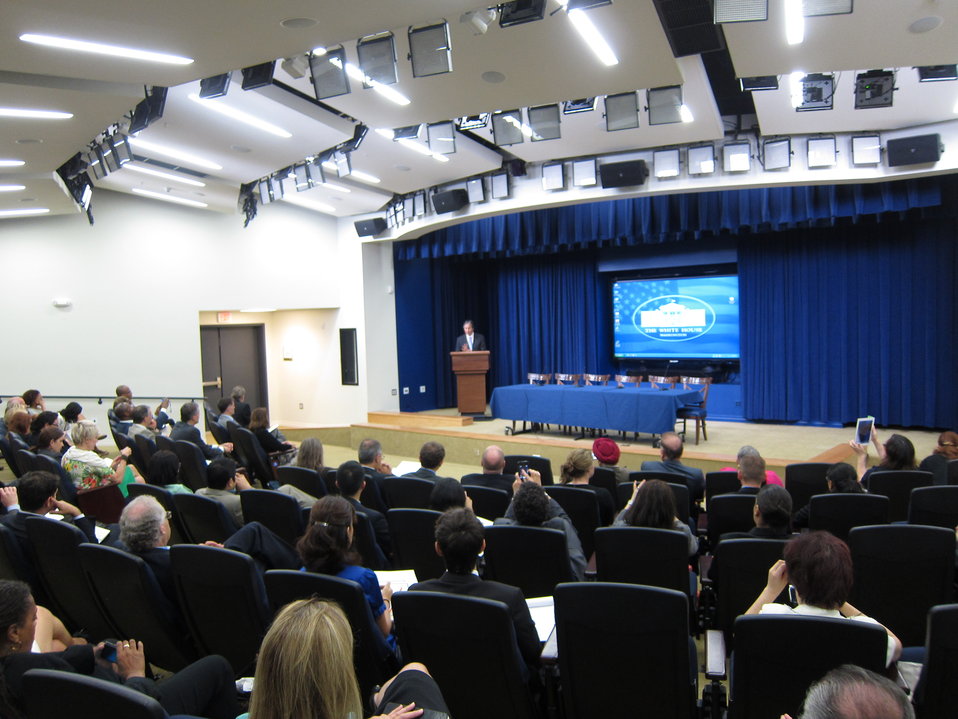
WH 2012 World Hepatitis Day Event